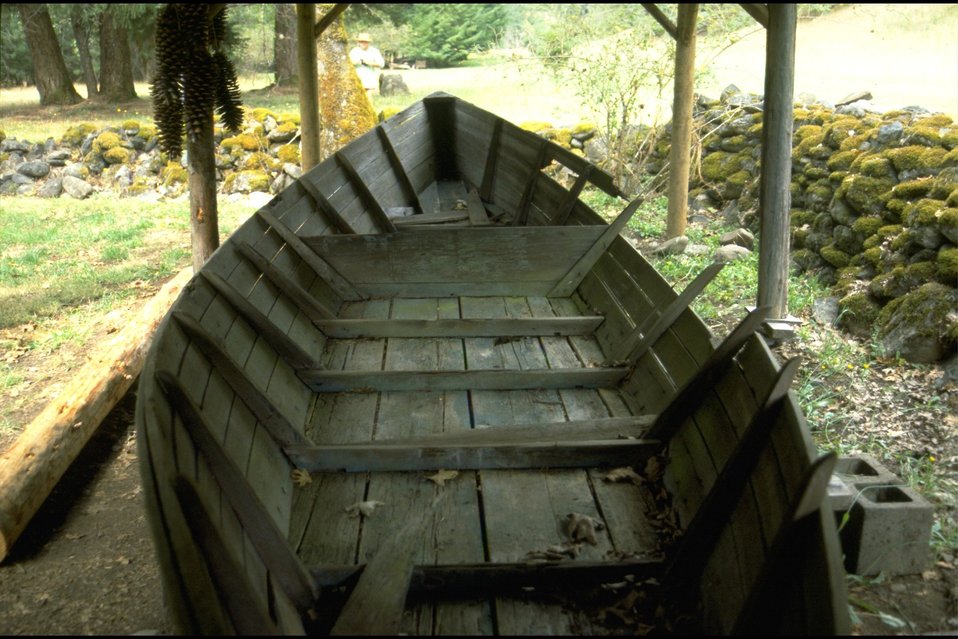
Rogue River - Winkle Bar. Zane Grey's Boat.